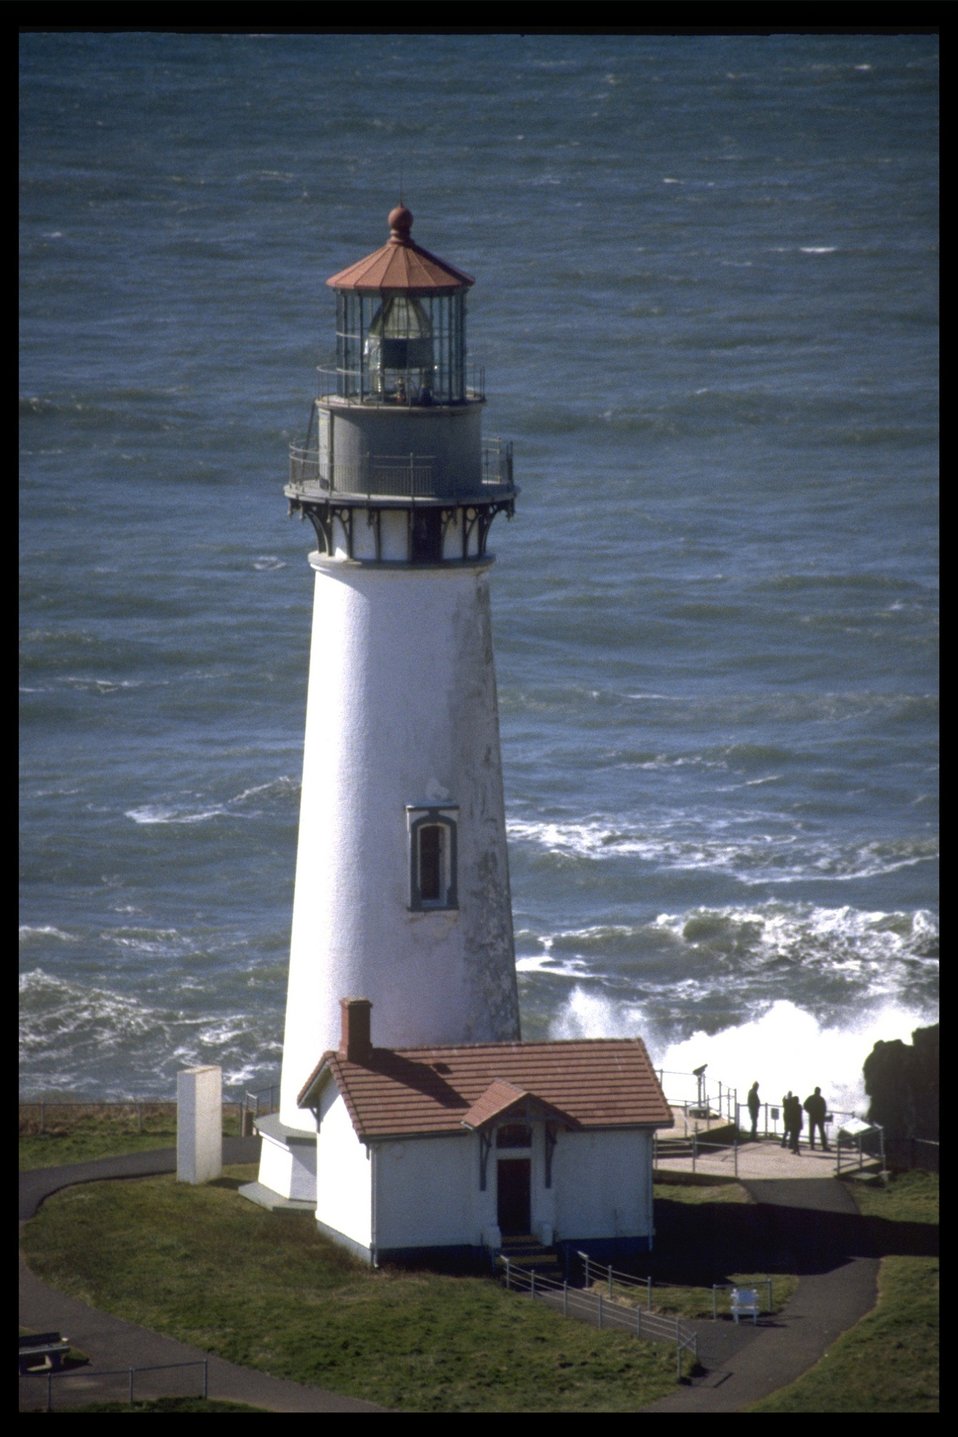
Yaquina Head Lighthouse.